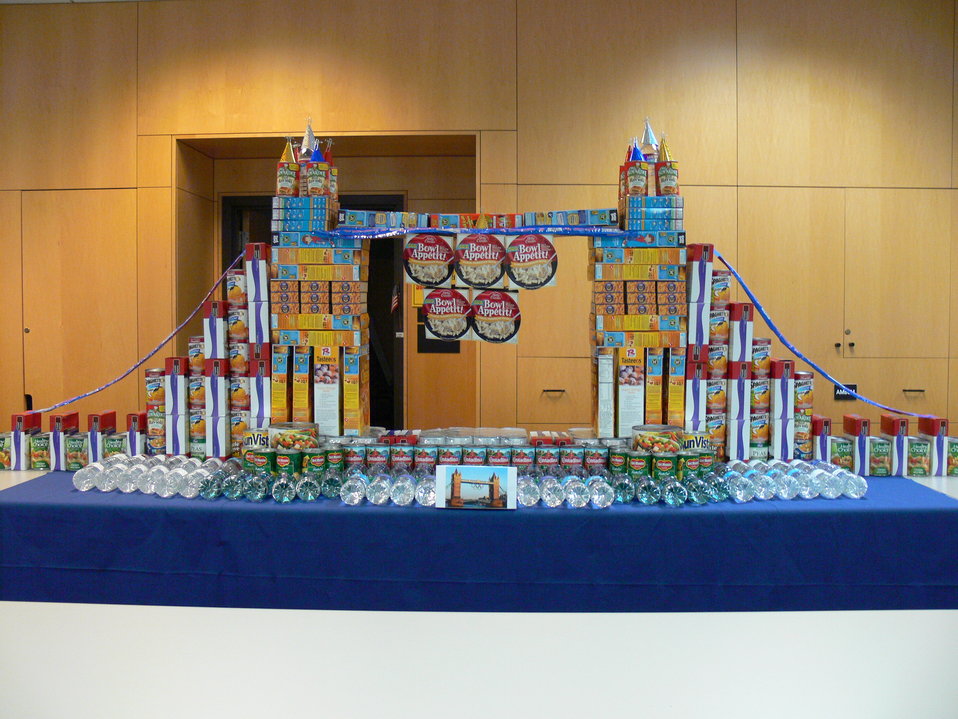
Feds Feed Families

Congratulations to the Nevada Site Office for their First Place finish (as the site-submitted entry) in the Feds Feeding Families CANstruction Sculpture Competition on August 21, 2012. All received trophies presented by Associate Deputy Secretary, Mr. Mel Williams.